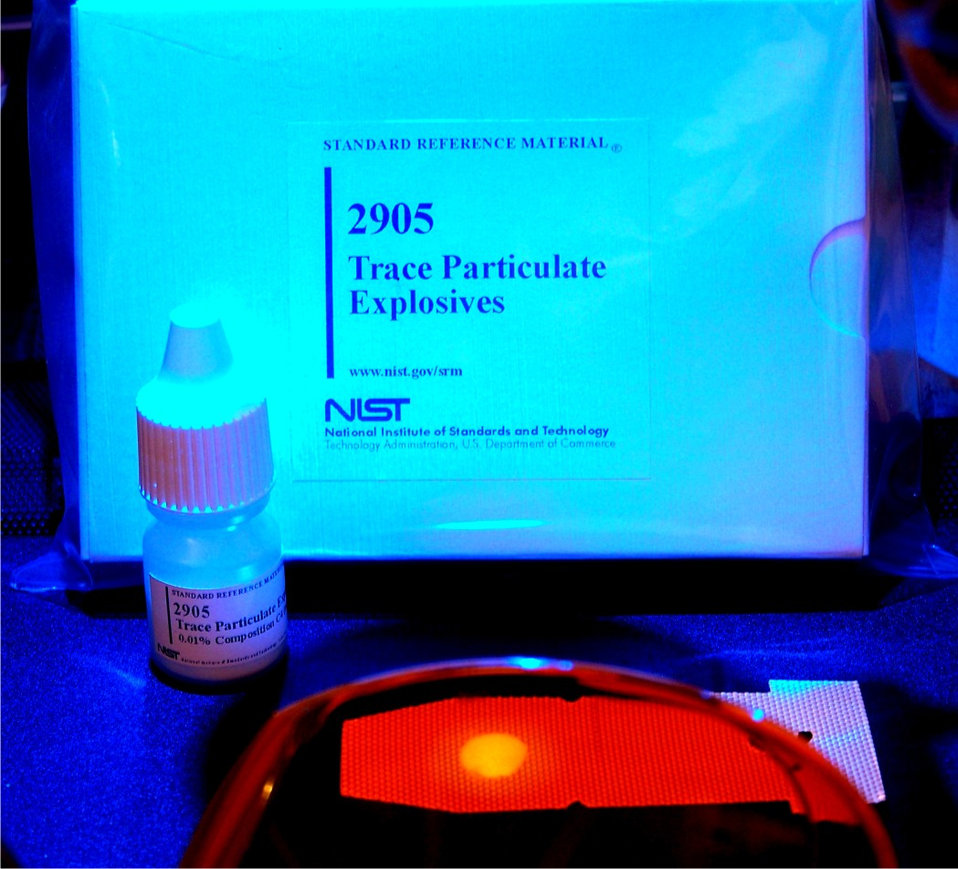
Trace Explosives Standard

SRM 2905, Trace Particulate Explosive Simulants, consists of four different test substances designed to simulate trace residues of C-4 plastic explosives and TNT. Seen through a pair of specially filtered glasses under a blue crime-scene light, a spot of the fluorescently tagged SRM is plainly visible (lower middle) on the test paper.